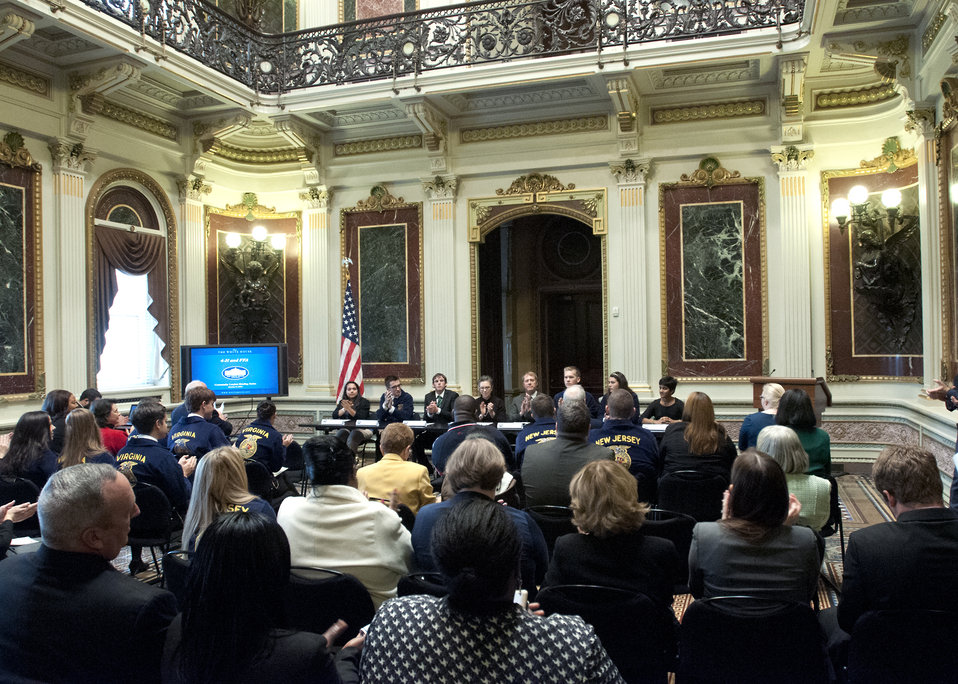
12 members of FFA and 4-H are recognized as Champions of Change at the Executive Office Building in Washington, D.C. on Tuesday, Oct. 9, 2012. The Champions of Change program was created to honor ordinary Americans doing great work in their communities. Each week, a different sector is highlighted and groups of Champions, ranging from educators to entrepreneurs to community leaders, are recognized for the work they are doing to serve and strengthen their communities.